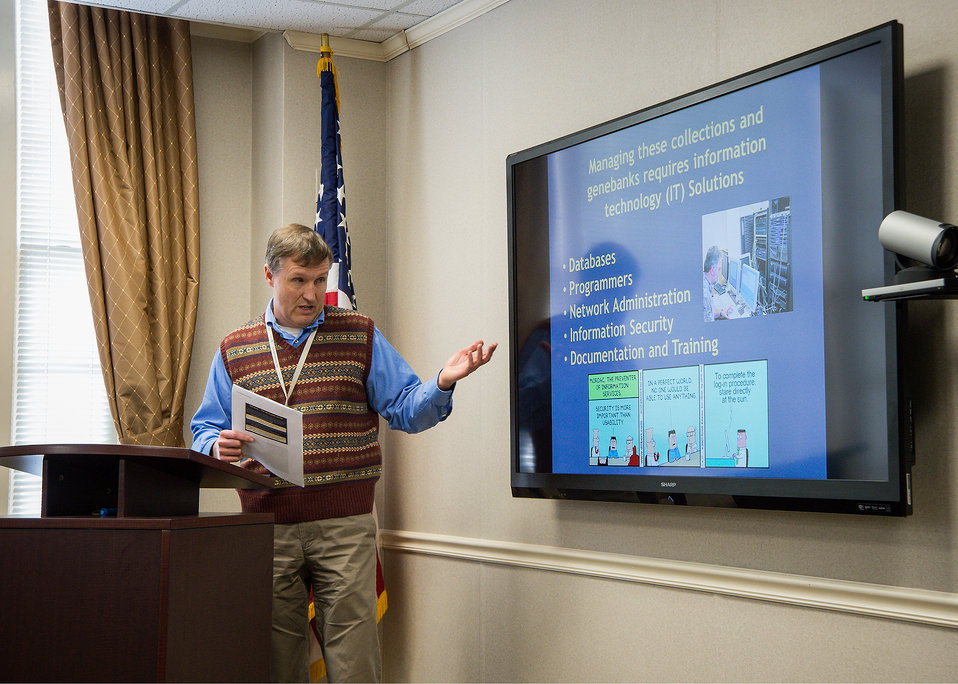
Gary Kinard, discussed the Agricultural Research Service Germ Plasma Resources Information Network with students from Thomas Jefferson High School of Science and Technology in Alexandria, VA during the U.S. Department of Agriculture (USDA), Office of the Chief Information Officer (OCIO) IT Job Shadow Day, Tuesday. Mar. 25, 2014. The OCIO IT Job Shadow Day hosts students from local high schools in the Washington, D.C. area annually with IT professionals and agricultural specialists from a variety of mission areas at USDA..